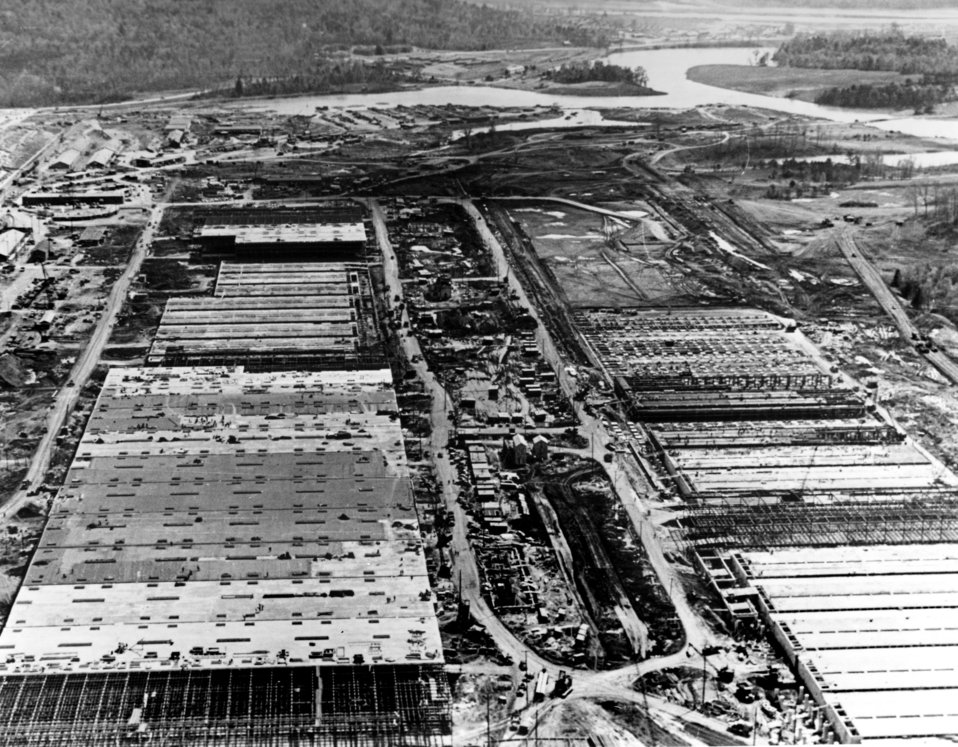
Early construction of 'U' K-25 Oak Ridge

DOE photo by Ed Westcott Oak Ridge Tennessee 4-22-1943